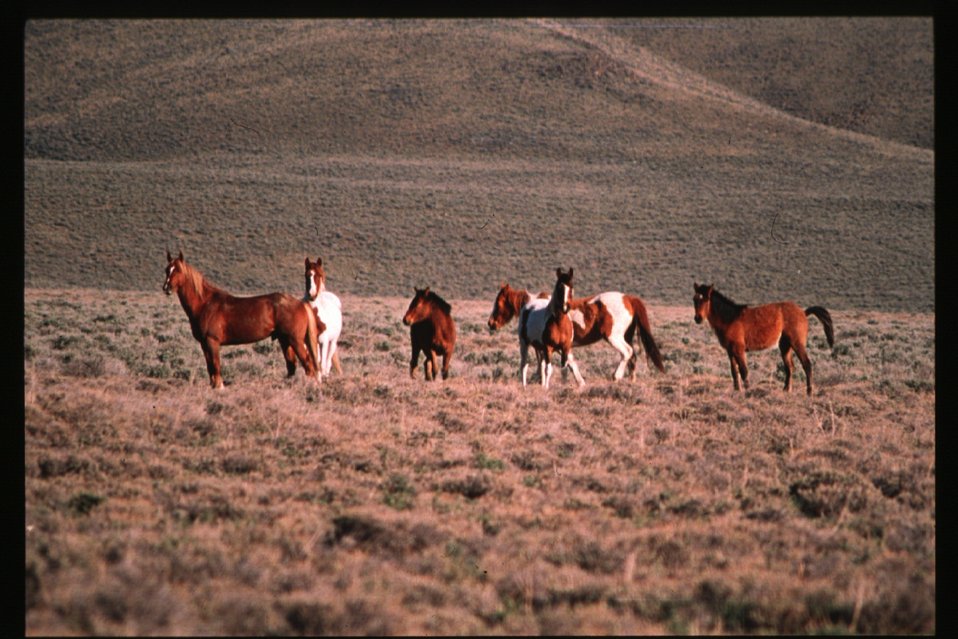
Wild horses Wild Horse and Burro Adoptions Program Owyhee Field Office Boise Corrals Lower Snake River District LSRD